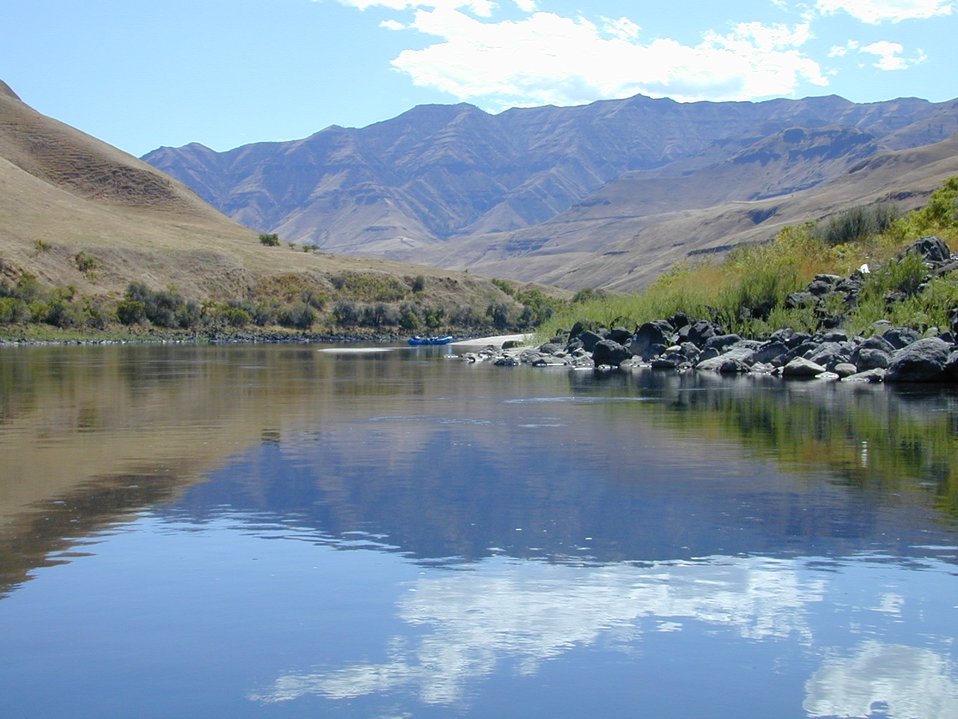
Scenic shot of Lower Salmon River Cottonwood Field Office UCSC Upper Columbia Salmon Clearwater District